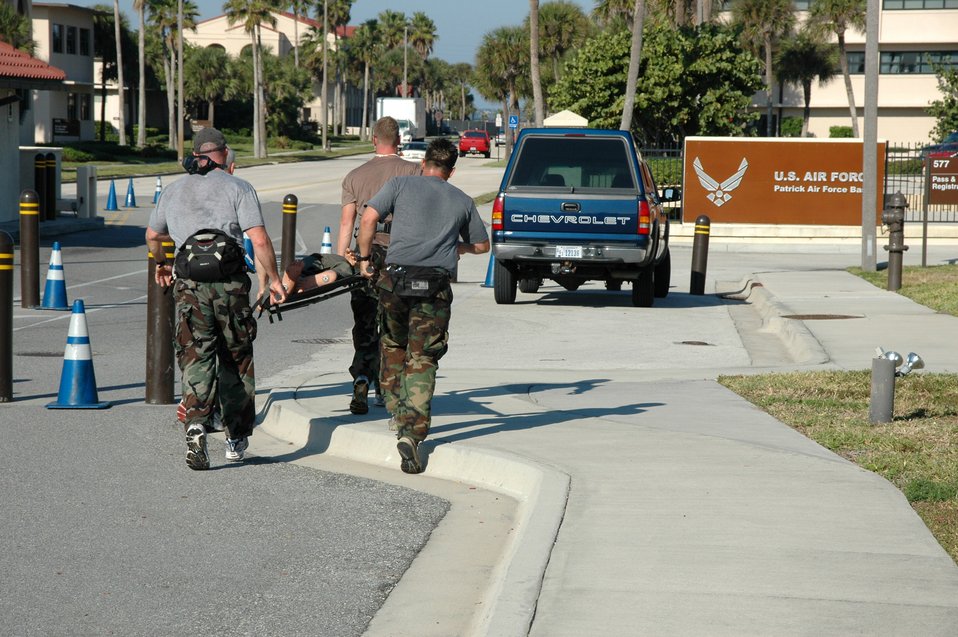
Mission Monster Mash builds camaraderie

Pararescuemen from the 308th Rescue Squadron sprint through the main gate at Patrick Air Force Base, Fla., while carrying a litter with a 60-pound mannequin during an exercise Nov. 17.